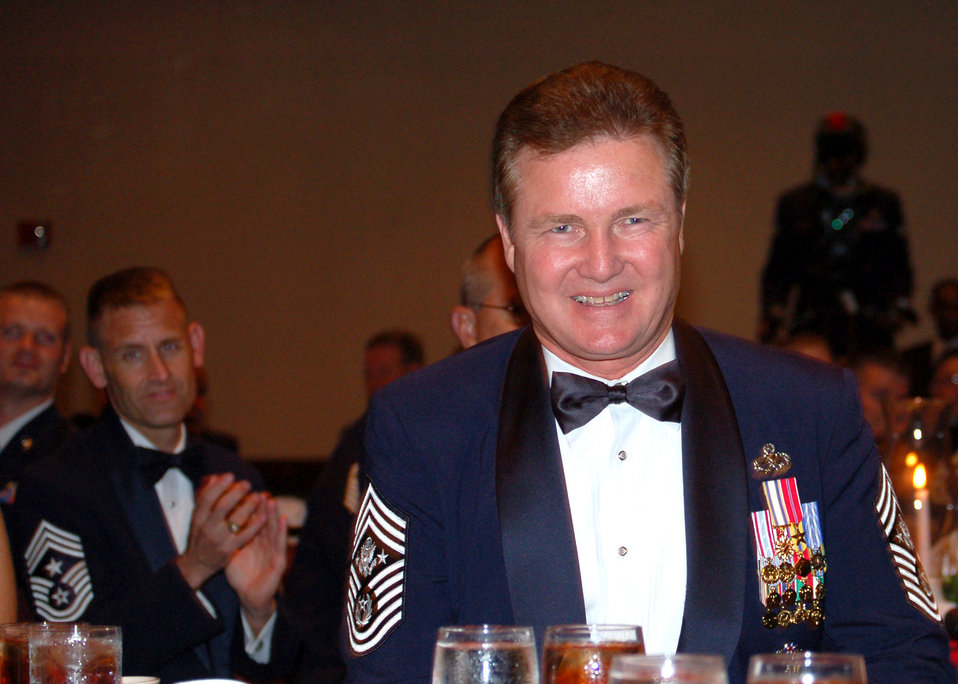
Airmen recognize impact of enlisted heritage

Fourteenth Chief Master Sgt. of the Air Force Gerald Murray is introduced to the more than 650 people in attendance for the Senior Enlisted Leaders Conference Heritage Dinner July 26 in Montgomery, Ala. The event was a celebration of the Air Force's 60th Anniversary and the 40th Anniversary of the inception of the office of the chief master sergeant of the Air Force.